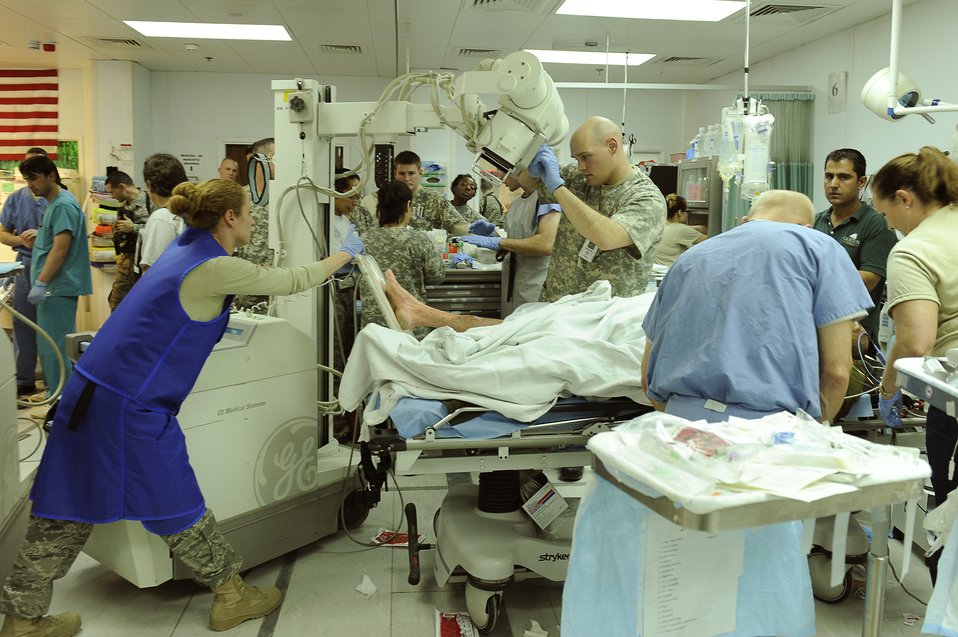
Afghan avalanches

Airmen from the 455th Expeditionary Medical Group work in the emergency room to save avalanche victims who were medically evacuated Feb. 9, 2010, to Craig Joint Theater Hospital at Bagram Airfield, Afghanistan. Dozens of Afghans were taken to Bagram Airfield after avalanches struck a mountain pass in the Parwan Province.